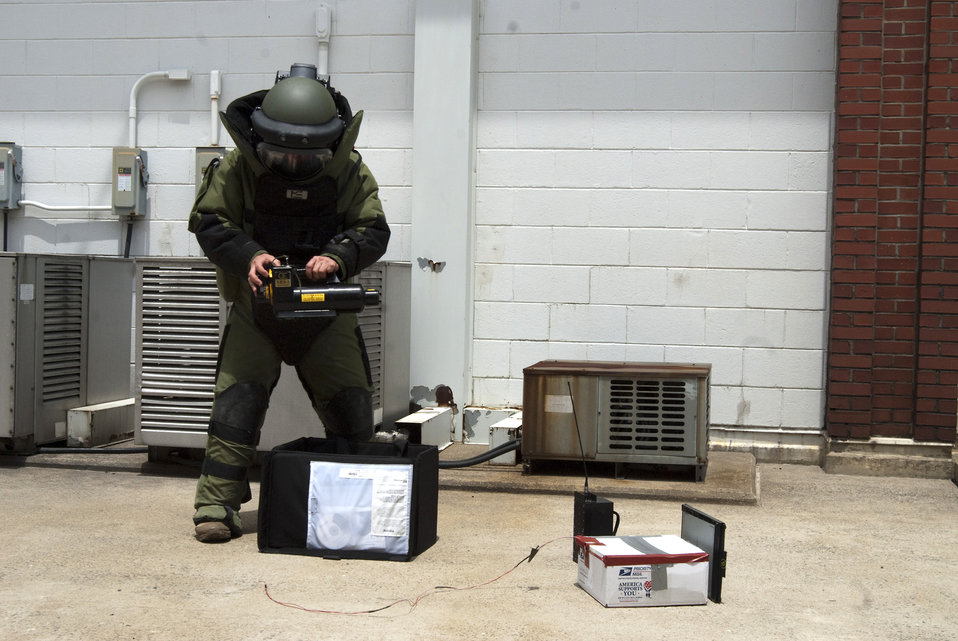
Let's see what's inside

Staff Sgt. Wesley Kory wears a protective suit while digitally x-raying a 'suspicious' package at Kunsan Air Base, South Korea, during exercise Beverly Bulldog July 12, 2010. The digital x-ray system helps law enforcement and customs members search for explosives, weapons, narcotics and other contraband. Sergeant Kory is an explosive ordnance technician with the 8th Civil Engineer Squadron.